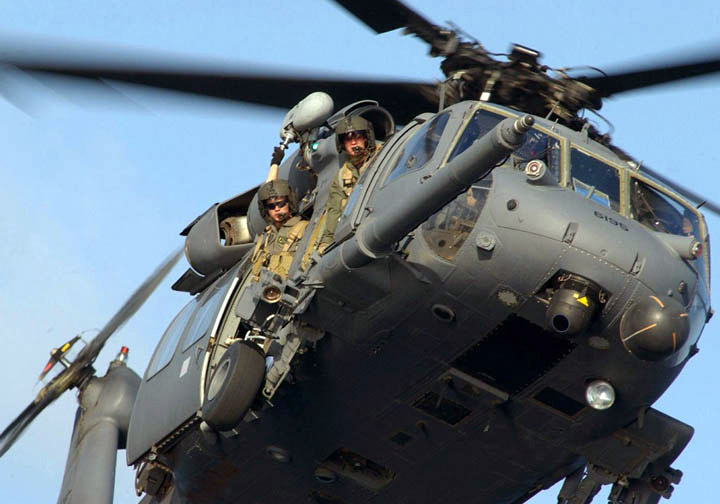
Rescue crews join search for missing NFL players, boaters

An Air Force Reserve rescue crew from the 920th Rescue Wing took off in an HH-60G Pave Hawk helicopter, like the one shown here, to join the Coast Guard in a search for four missing boaters 50 miles west of Clearwater Pass on the Gulf Coast of Florida at 5 p.m. from Patrick Air Force Base, Fla.